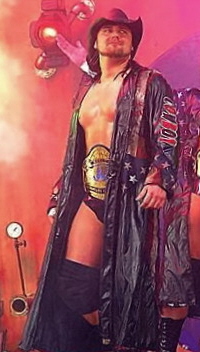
Cowboy James Storm during a TNA Impact taping